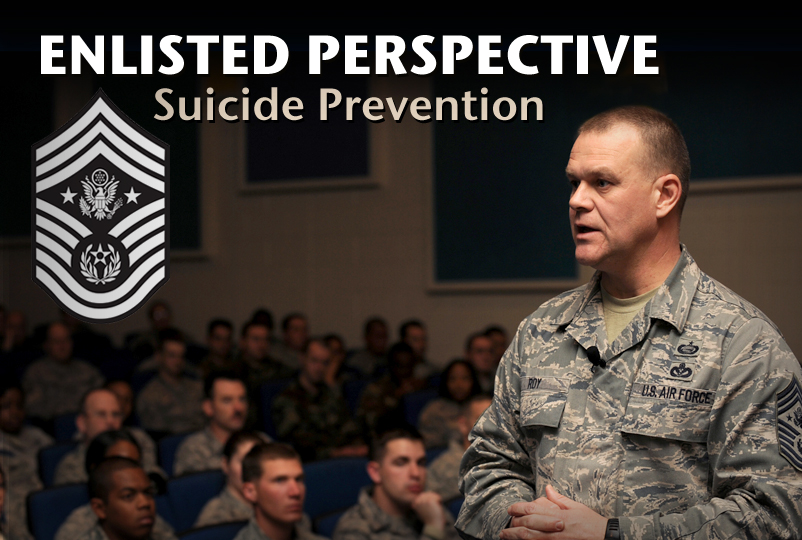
Chief Roy issues call for action in latest 'Perspective'